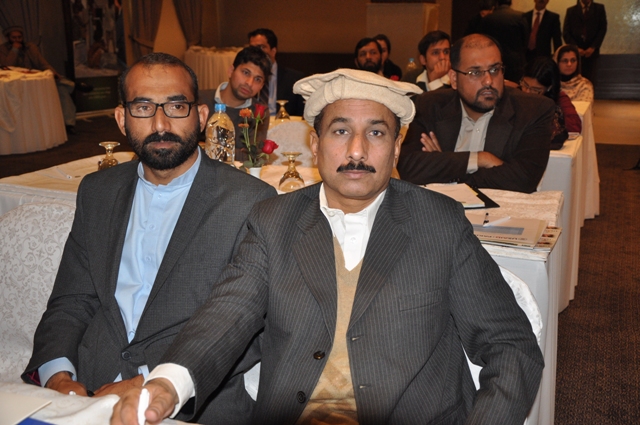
Workshop Participants